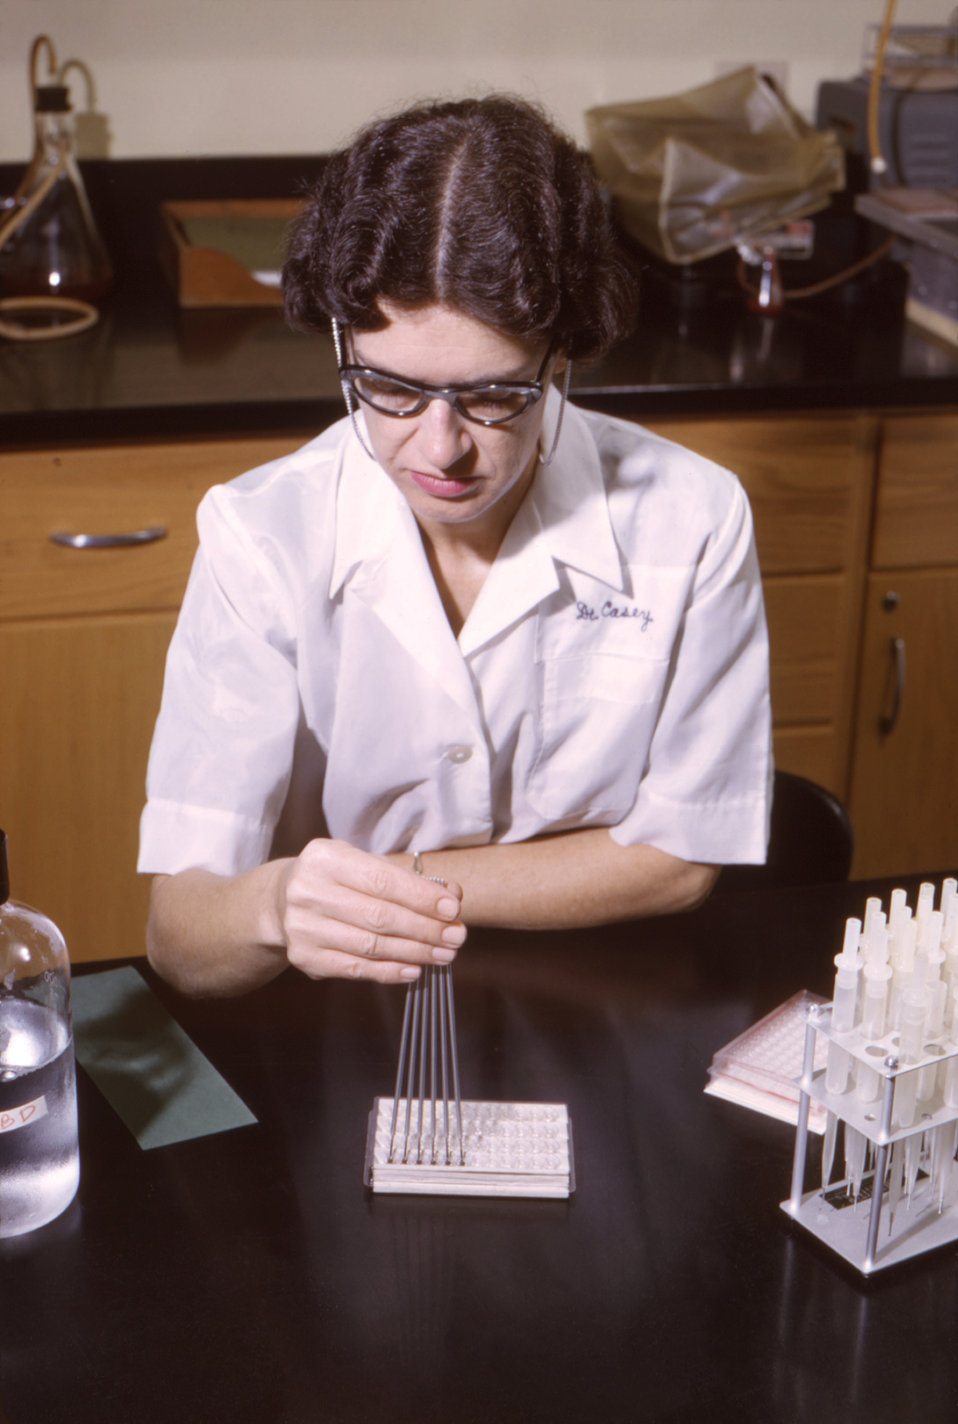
This historic 1965 image depicted Centers for Disease Control's staffer, Dr. Helen Casey while she was using a manual transfer technique in order to perform a micro-titer test.